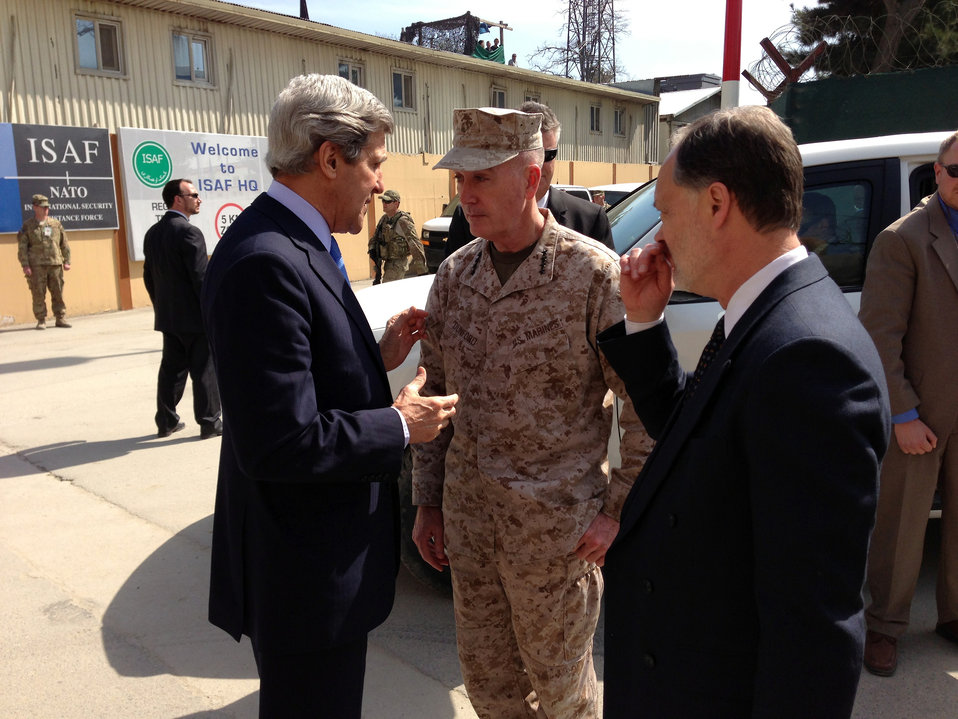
Secretary Kerry With U.S. Marine Corps General Dunford in Afghanistan

U.S. Secretary of State John Kerry speaks with U.S. Marine Corps General Joseph Dunford, as U.S. Ambassador to Afghanistan James Cunningham listens, in Kabul, Afghanistan, March 26, 2013.